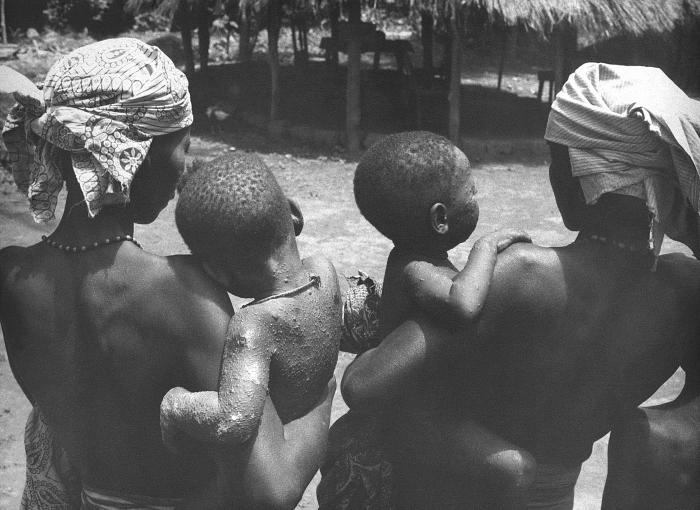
This image was captured during Nigeria's Smallpox Eradication Program activities, 1968.